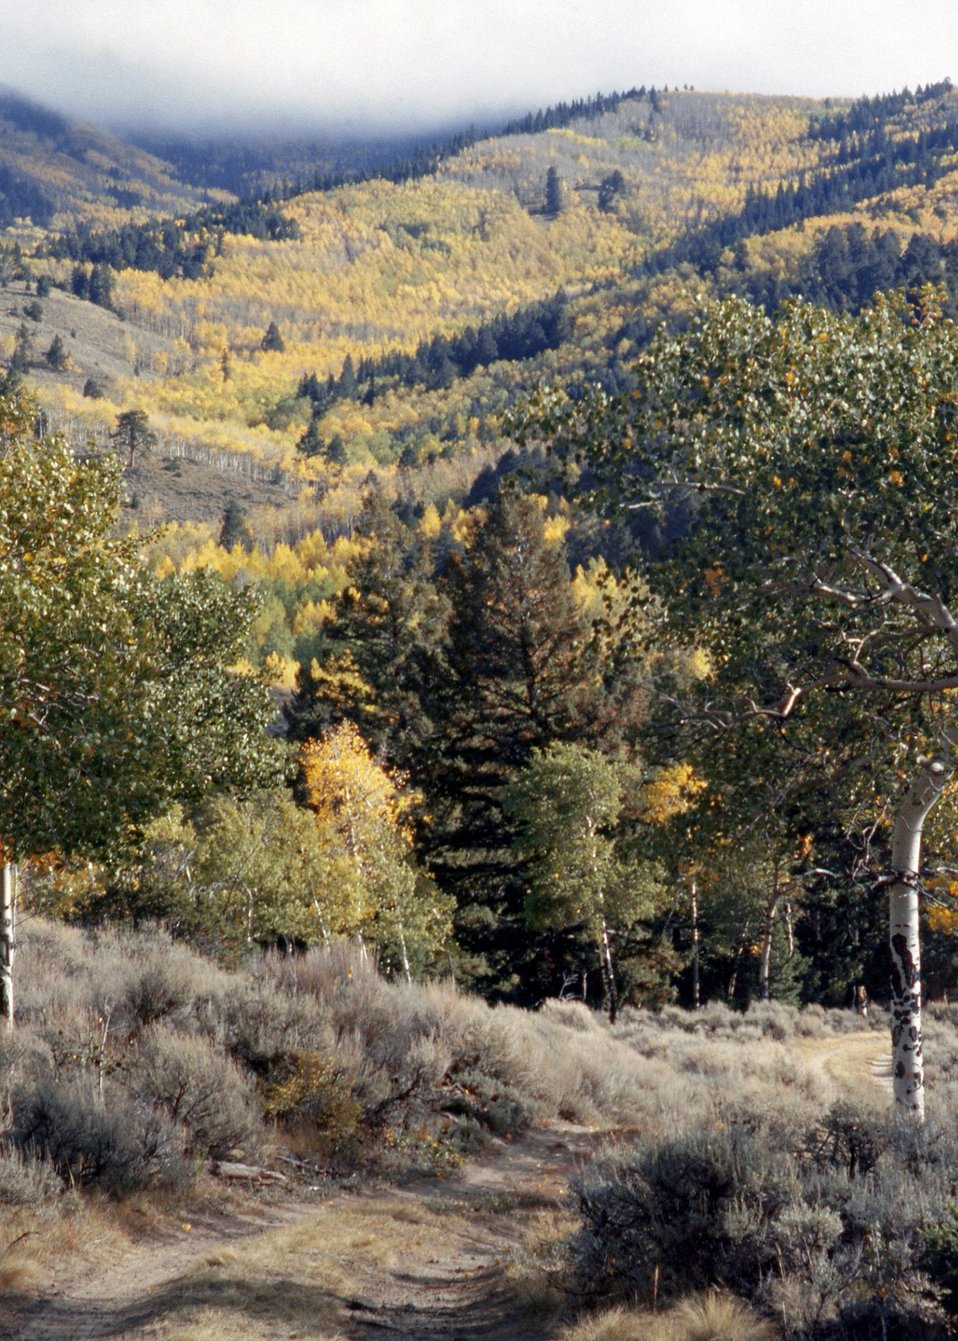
Aspen Trees Fall